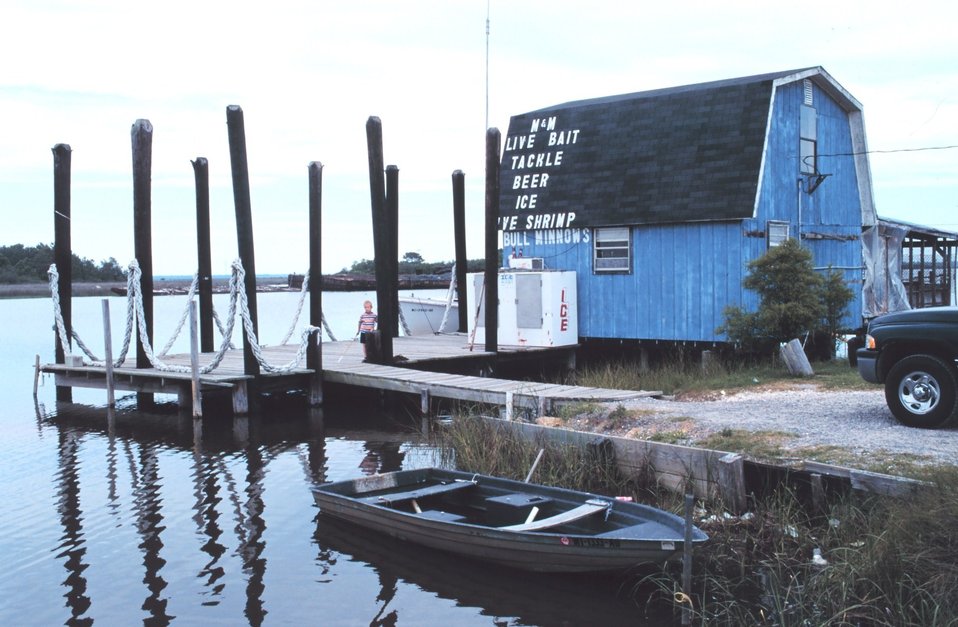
M&M Live Bait Store features tackle, live bait, and refreshments for the recreational fisherman.